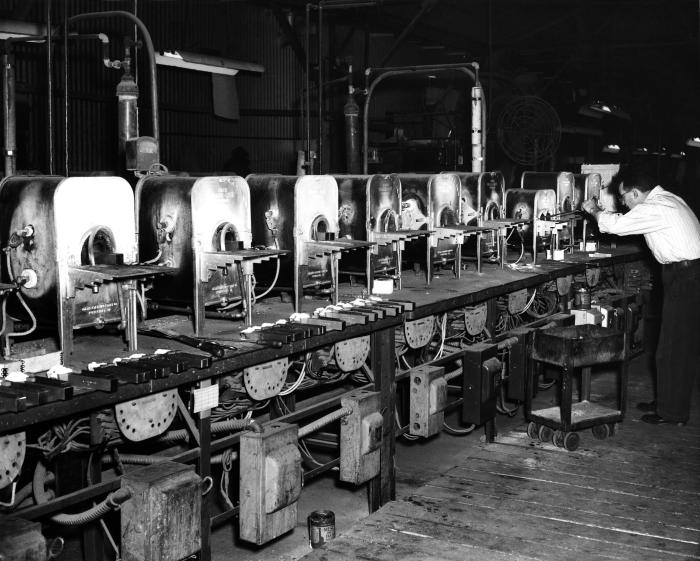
This 1946 historical photograph was provided by the Center for Disease Control's (CDC), National Institute for Occupational Safety and Health (NIOSH). In this image, a plant worker was seen using machinery inside a tungsten carbide (W2C) machine shop. Note that the worker was not wearing a face mask. Today's workers are warned to avoid inhalation of the very fine W2C dust; wear protective gloves to prevent skin contact; protect eyes from airborne dust contamination; avoid eating, drinking, or smoking while in the machine shop environment, which could lead to the ingestion of dust contaminants.